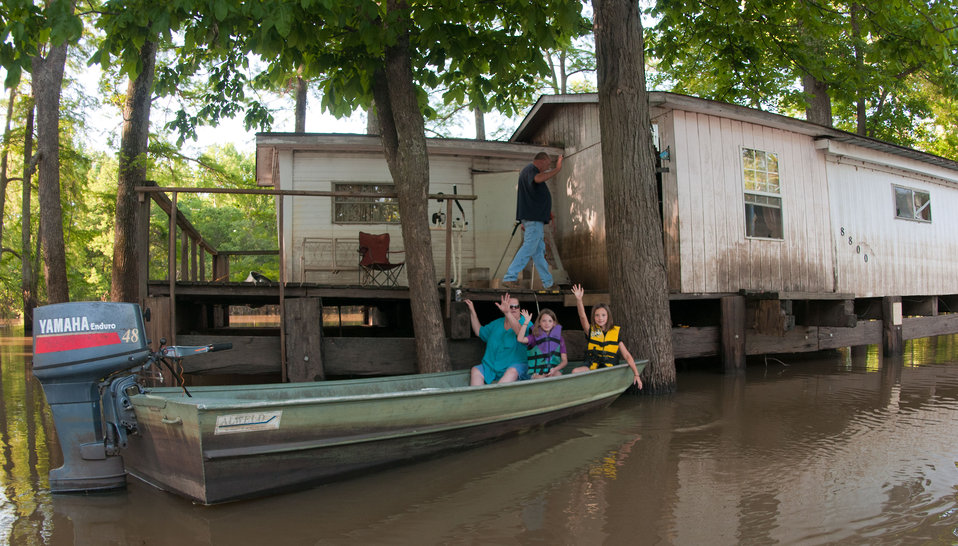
Despite the challenges facing Robert (blue t-shirt) and Brenda Moffatt (left) and their grand daughters Lindsey (10, yellow life jacket) and Katlyn (9) give a friendly wave good-bye from their home near Open Lake, in Lauderdale County, TN, on Saturday, May 21, 2011.